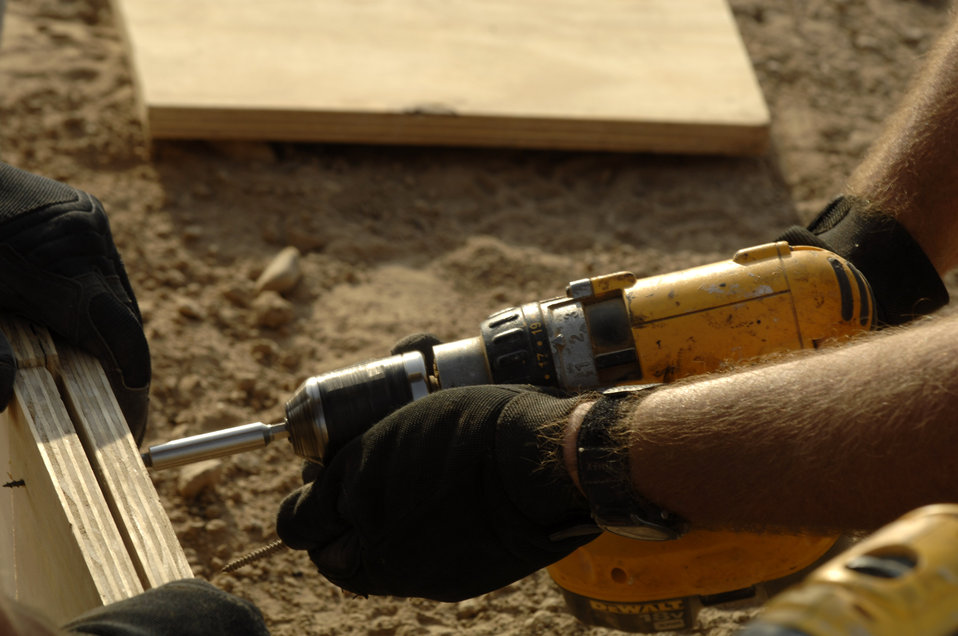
Down and Dirty

Staff Sgt. Amos Greer fastens wooden forms together Oct. 3 that will be used for the concrete footers for sun shades being installed on the Ali Base, Iraq, flightline. Sergeant Greer and other Airmen in the 407th Civil Engineer Squadron are working around the clock to build the sun shades by November.